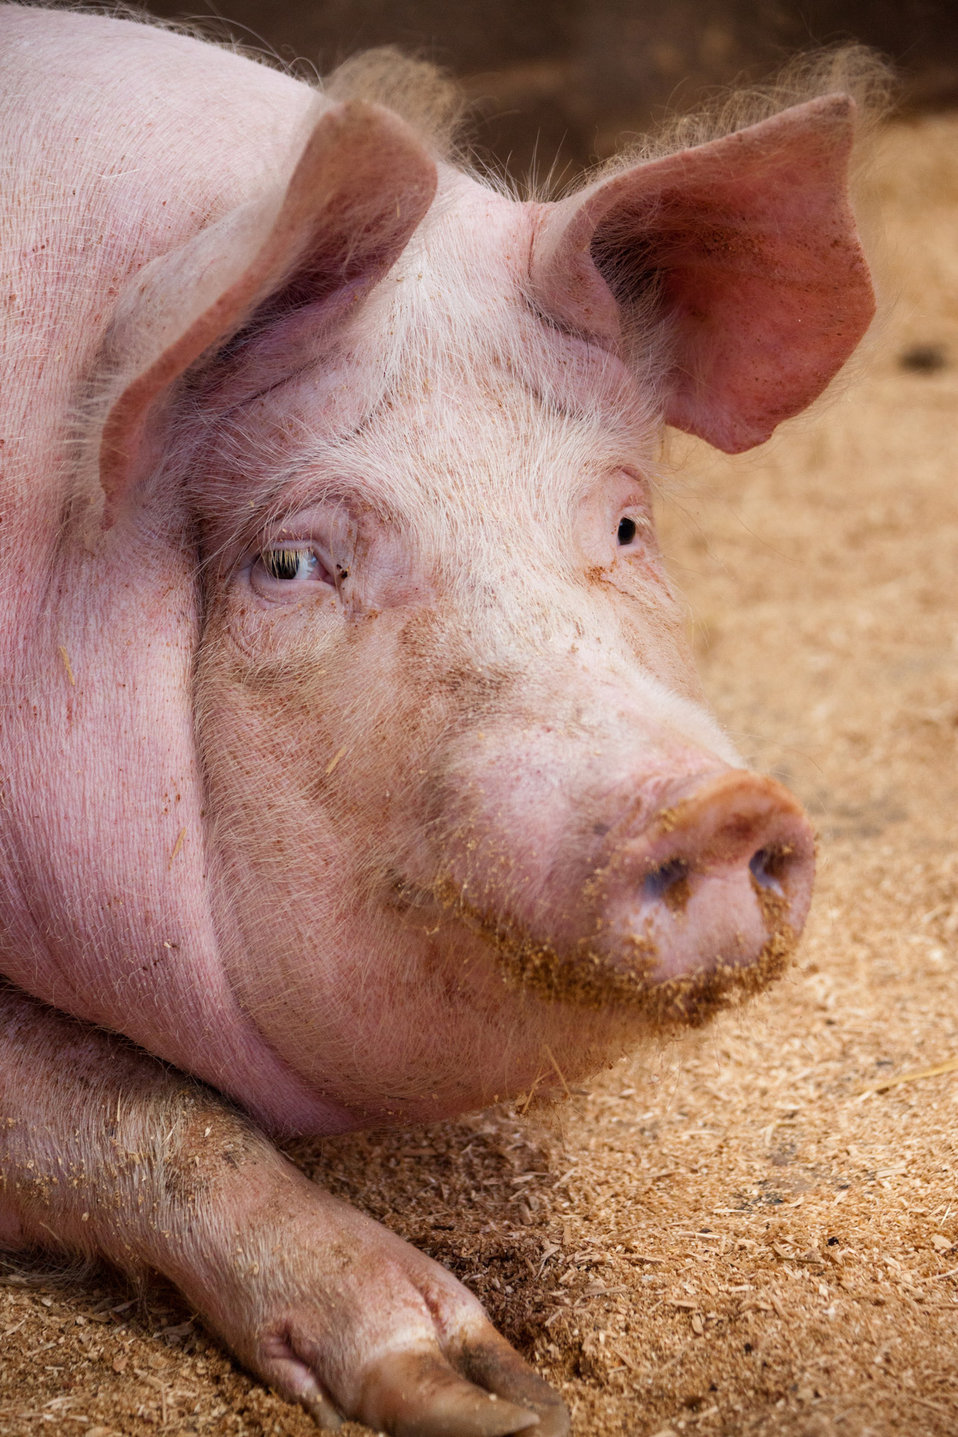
Portrait of a pig

A pig with open eyes - could be used in an animation with my other picture of the same pig with closed eyes.